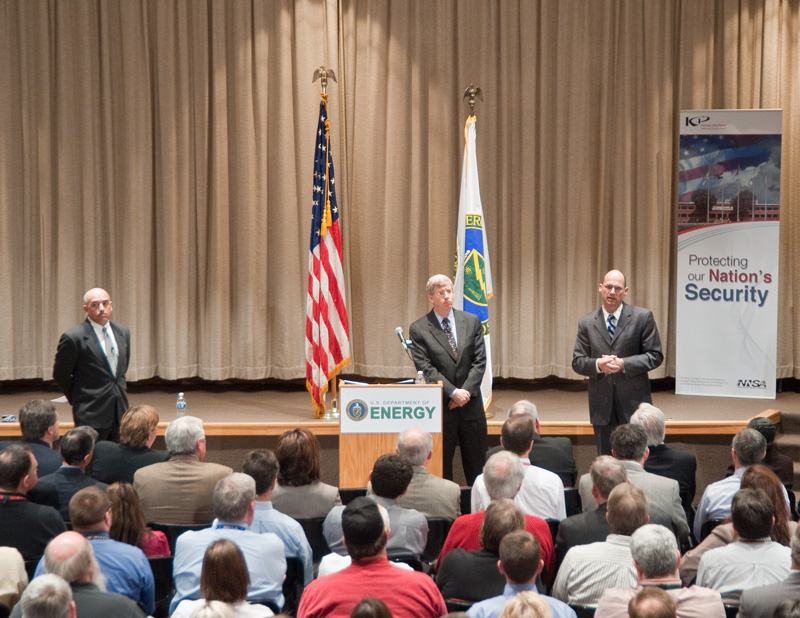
Deputy Secretary Daniel Poneman addresses KCP employees.